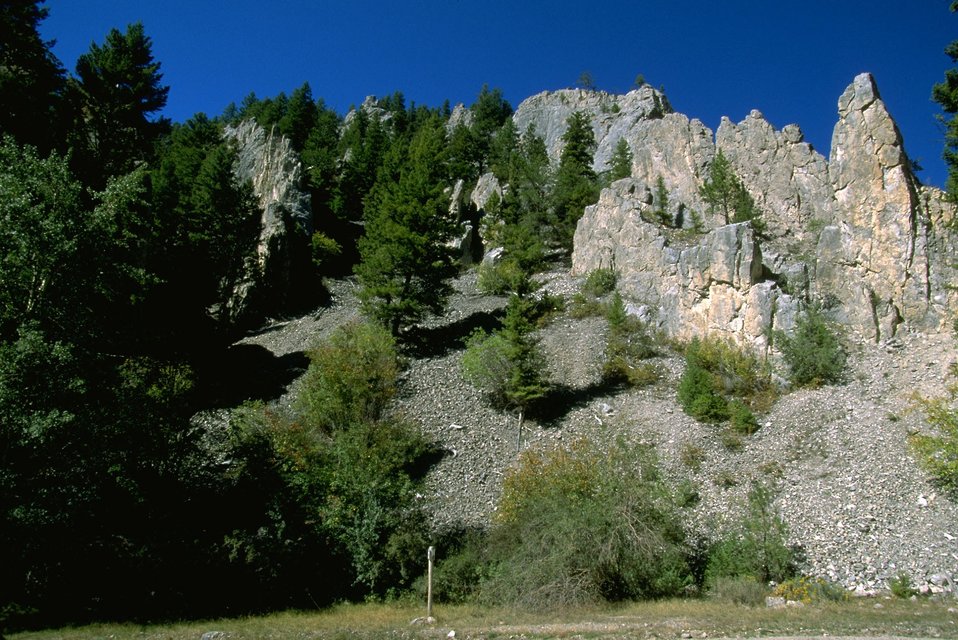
Rattler Gulch-Limestone Cliffs ACEC